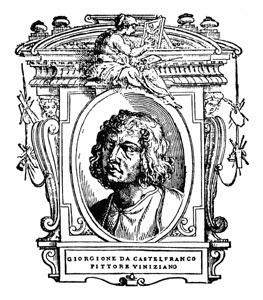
Illustratio from 'Le Vite' by Giorgio Vasari, edition of 1568. For the artist portrayed see filename